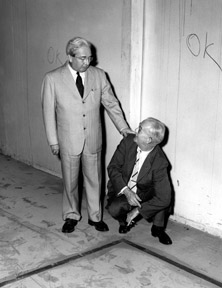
Leo Szilard (standing) and Norman Hilberry at site of CP-1 below West Stands, Stagg Field, University of Chicago, just before the start of the demolition of the West Stands in August 1957.